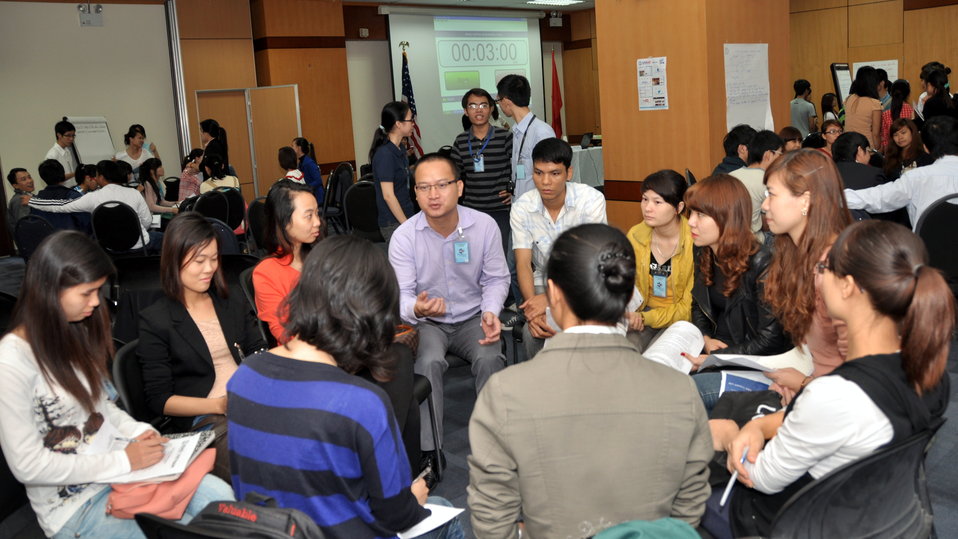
Students join the ‘USAID and Higher Education in Vietnam’ talk

Photo: @USAIDVietnam, November 19, 2012